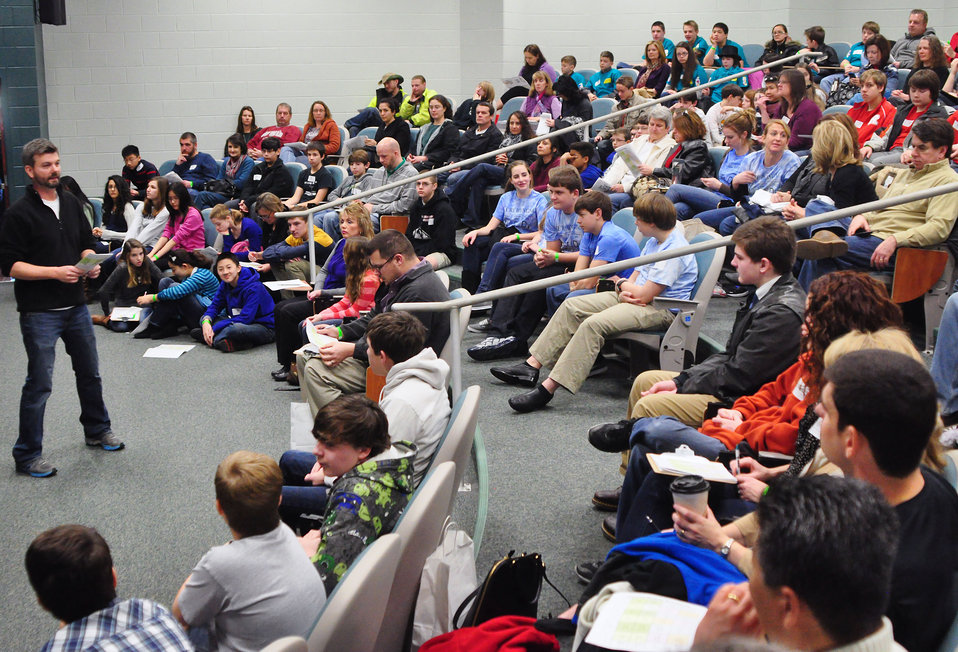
DOE Middle School Science Bowl

14-017 DOE photo Lynn Freeny 2-1-2014 Oak Ridge Tennessee